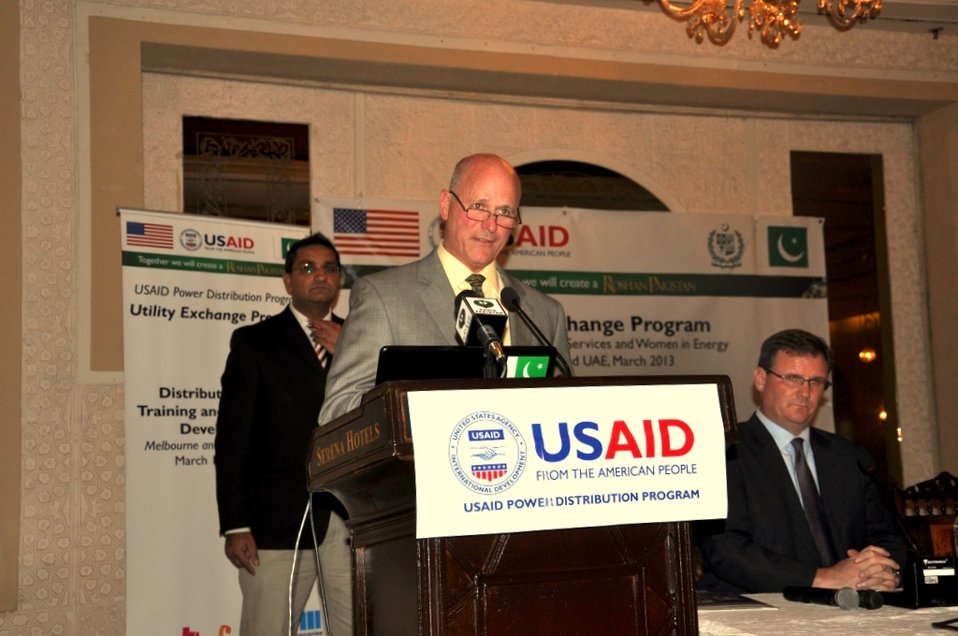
USAID launches Utitlity Exchange Program for DISCOs

The USAID Power Distribution Program, through its Utility Exchange Program (UEP), sponsored a study tour for DISCO professionals to visit the United Arab Emirates (UAE) and Australia this month. UEP focuses on building professional development at DISCOs through exchange programs to utilities in other developed countries to gain a better understanding of international best practices in commercial operations and customer service. Thus far, six exchange programs have been arranged to Turkey, South Africa, Australia, UAE and the United States.

“All participants must be commended for taking the opportunity to share knowledge and experience with their counterparts in the UAE and Australia. I am sure the ideas and tools they have brought back with them will benefit not only their companies but the entire power sector at large.”
Acting Director, USAID Pakistan Energy Office
Timothy Moore